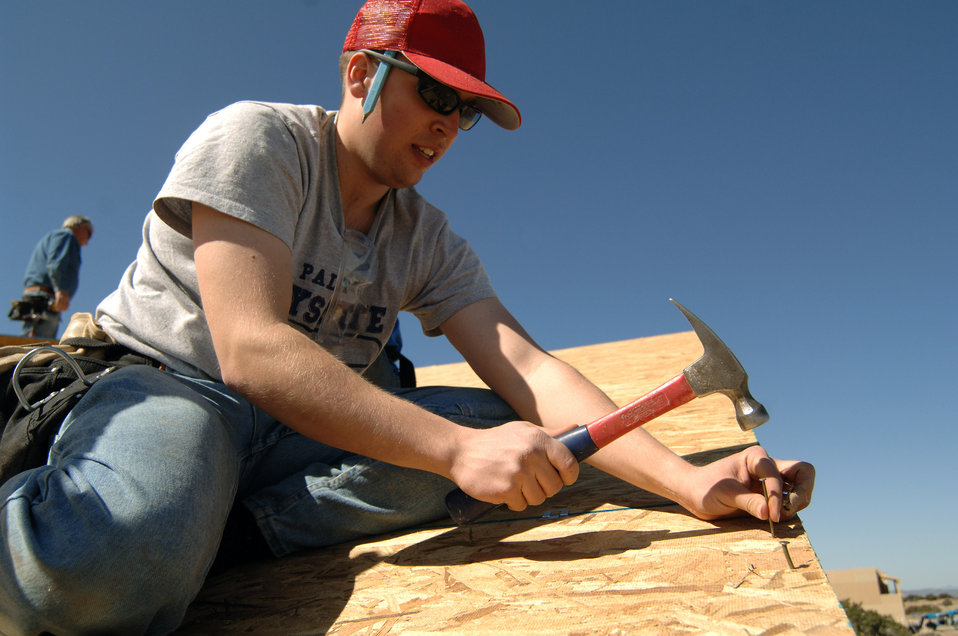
Cadets give up spring break to build homes

Cadet 3rd Class Nate Moeller, Cadet Squadron 1, works on the roof of a Habitat for Humanity home. Cadet Moeller is one of 65 Air Force Academy cadets giving up their spring break this week, to build homes for the needy in Santa Fe, N.M.; Cody, Wyoming; El Paso, Texas; and Beaumont, Texas.